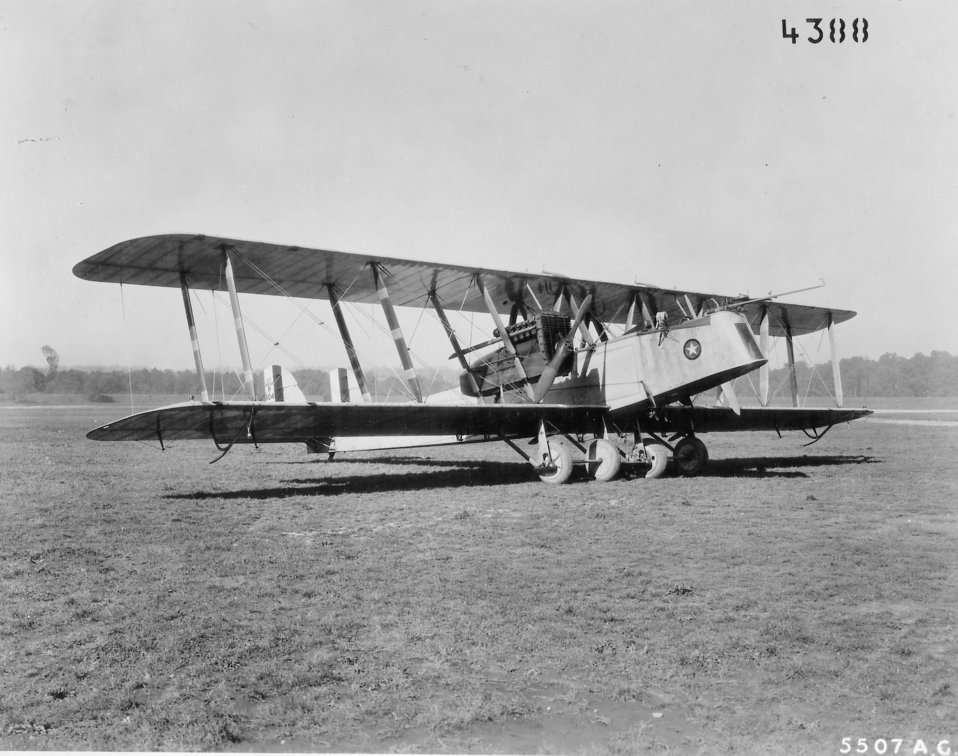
Martin GMB Bomber

EARLY YEARS -- Glenn Martin GMB Bomber, 1936. The first US-designed bomber procured by the US Army in quantity in the World War I era. The US Army had previously purchased the English Handley-Page O/400 and Italian Caproni designs for construction by US builders with Liberty 12-A engines in place of the original engines.